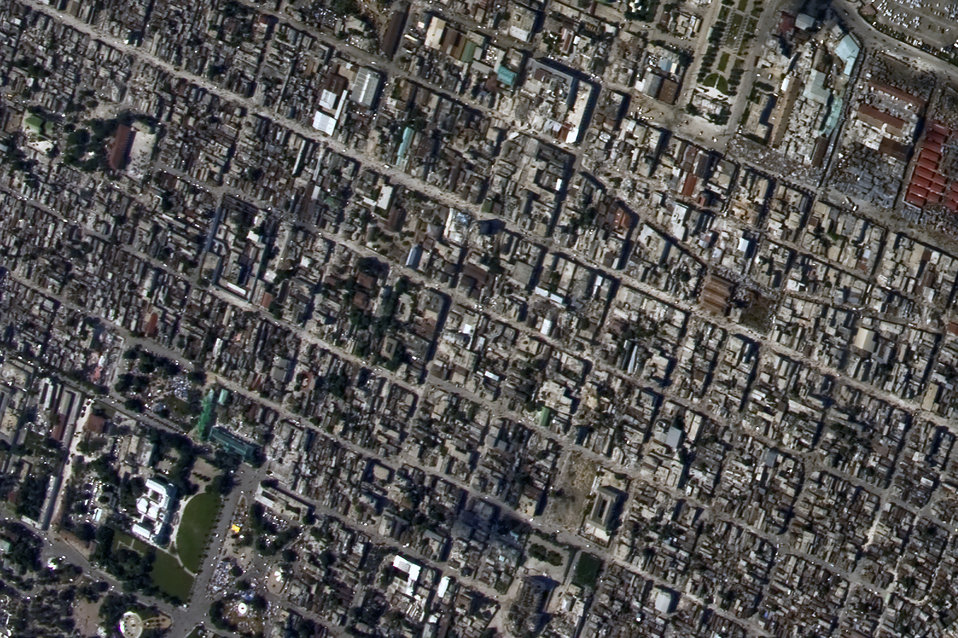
Haiti Observation

An aerial view of Port-au-Prince, Haiti with the damaged Presidential Palace in the bottom left hand corner from an OC-135B Observation Aircraft Jan. 14. The OC-135B flew over Haiti for over three hours taking panoramic photos to help coordinate U.S. military support to the Haiti relief effort.